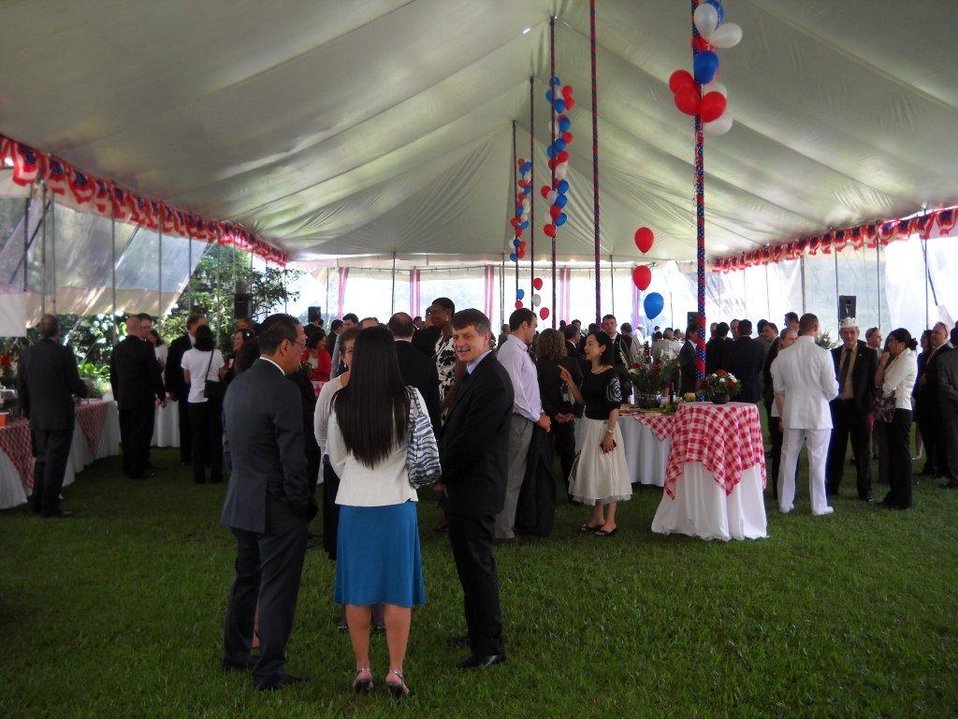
July 4th Celebration at U.S. Embassy in Guatemala

U.S. Ambassador to Guatemala Stephen McFarland speaks with guests on his lawn at the U.S. Independence Day Celebration in Guatemala City, Guatemala, on July 2, 2010.